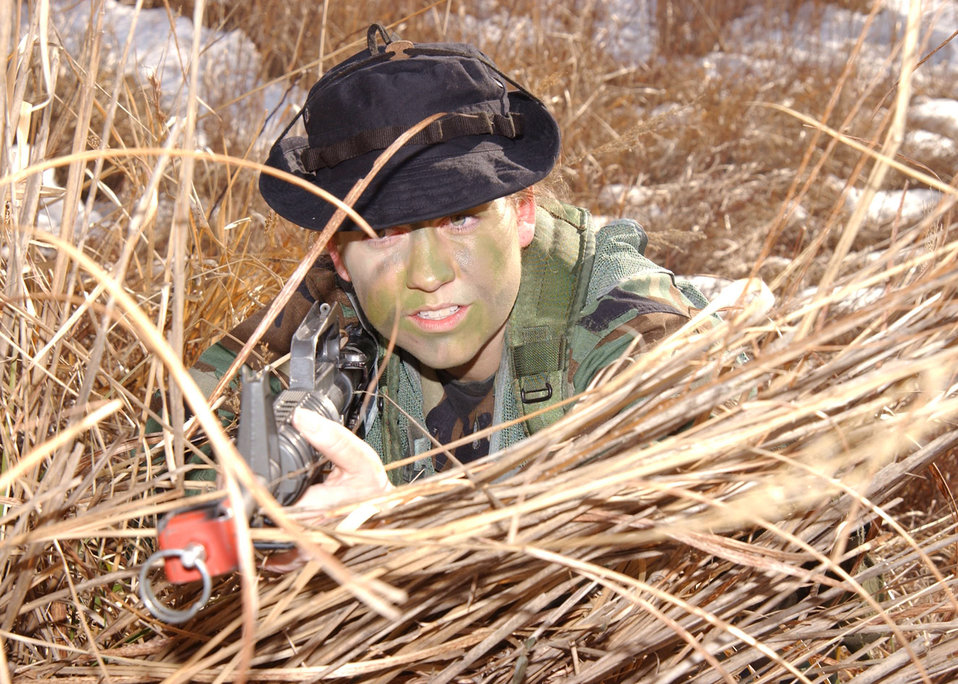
Taking cover

KUNSAN AIR BASE, South Korea (AFPN) -- First Lt. Jennifer Jones takes cover during a weeklong combat employment readiness exercise Feb. 6. Jones is an 8th Security Forces Squadron member who was part of the